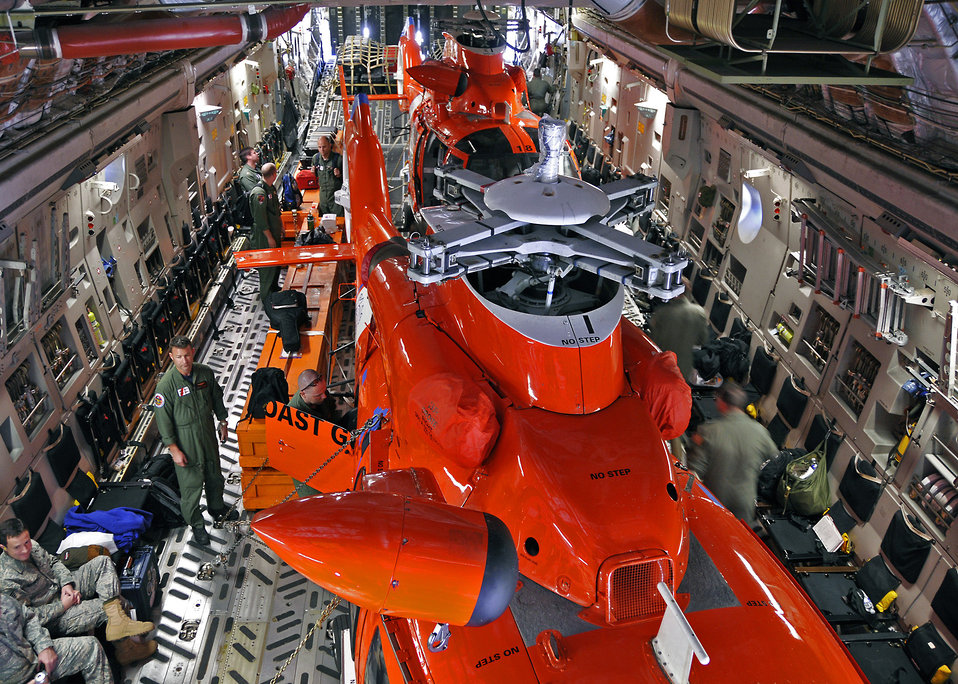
Moving the Coast Guard

Two Coast Guard helicopters are loaded onto a C-17 Globemaster III April 7 at Charleston Air Force Base, S.C. The helicopters were delivered to Central America for missions there. The C-17 aircrew is from the Air Force Reserve's 315th Airlift Wing from Charleston AFB.